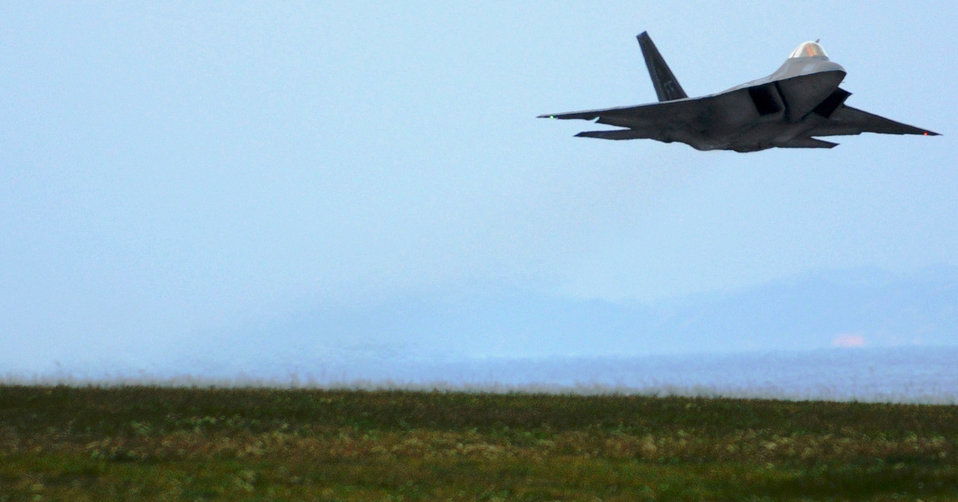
F-22s begin training in Japan

An F-22 Raptor takes off for a mission Jan. 14 at Kadena Air Base, Japan. The F-22 is deployed from the 27th Fighter Squadron Langley Air Force Base, Va. in support of U.S. Pacific Command.